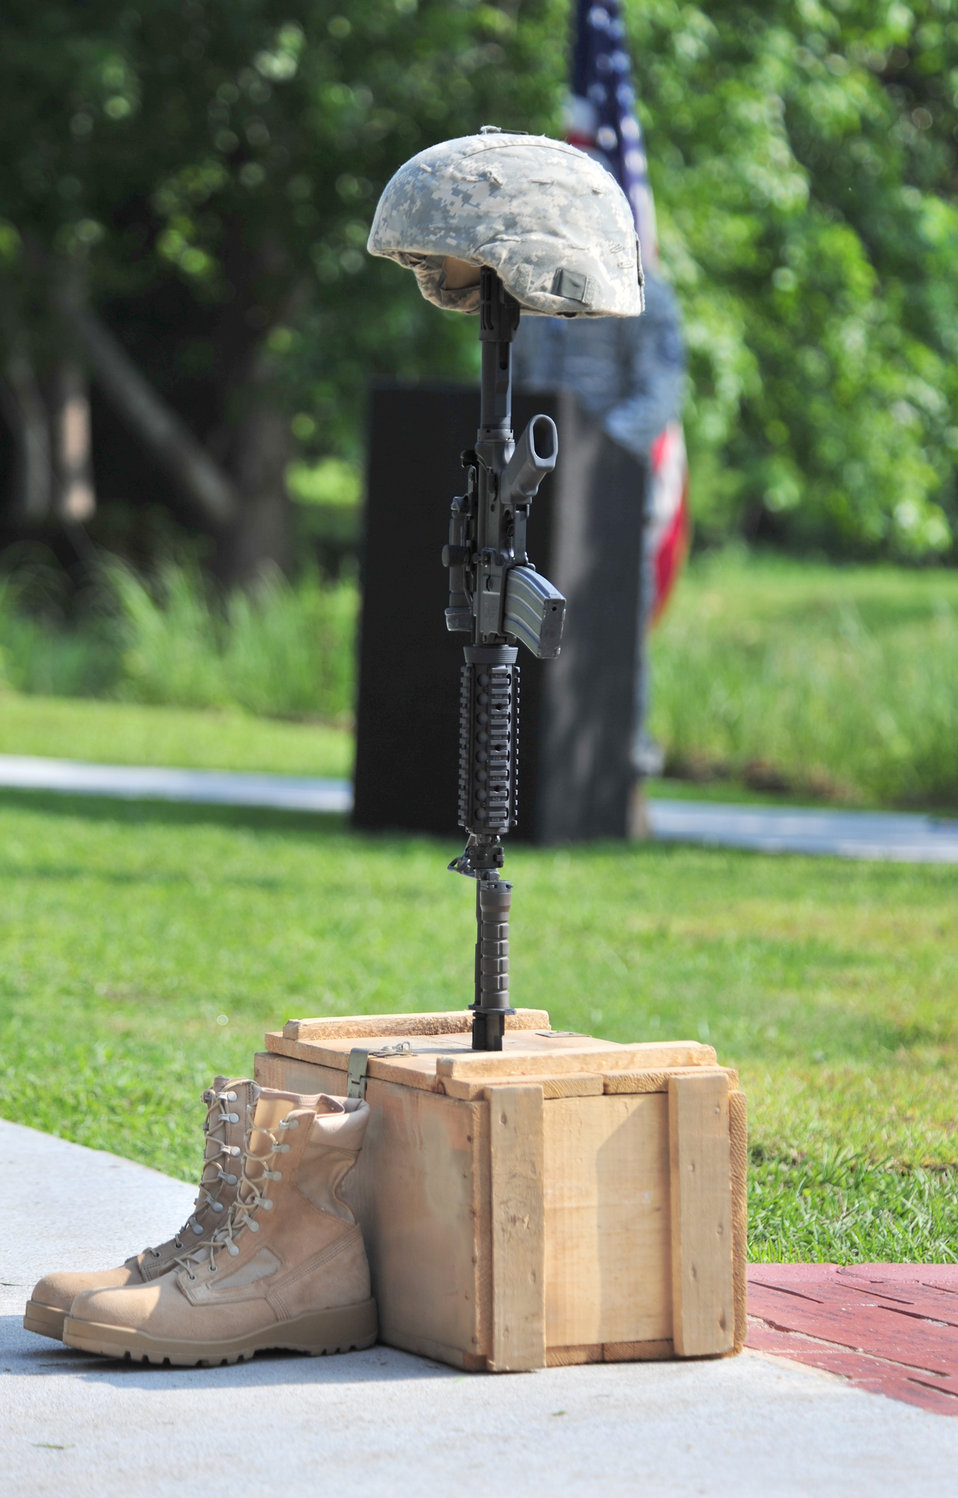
Fallen Airmen Memorial

A battlefield cross was constructed at the Fallen Airmen Memorial dedication ceremony at Memorial Lake, S. C., June 2, 2010 in honor of Airmen lost during battle.